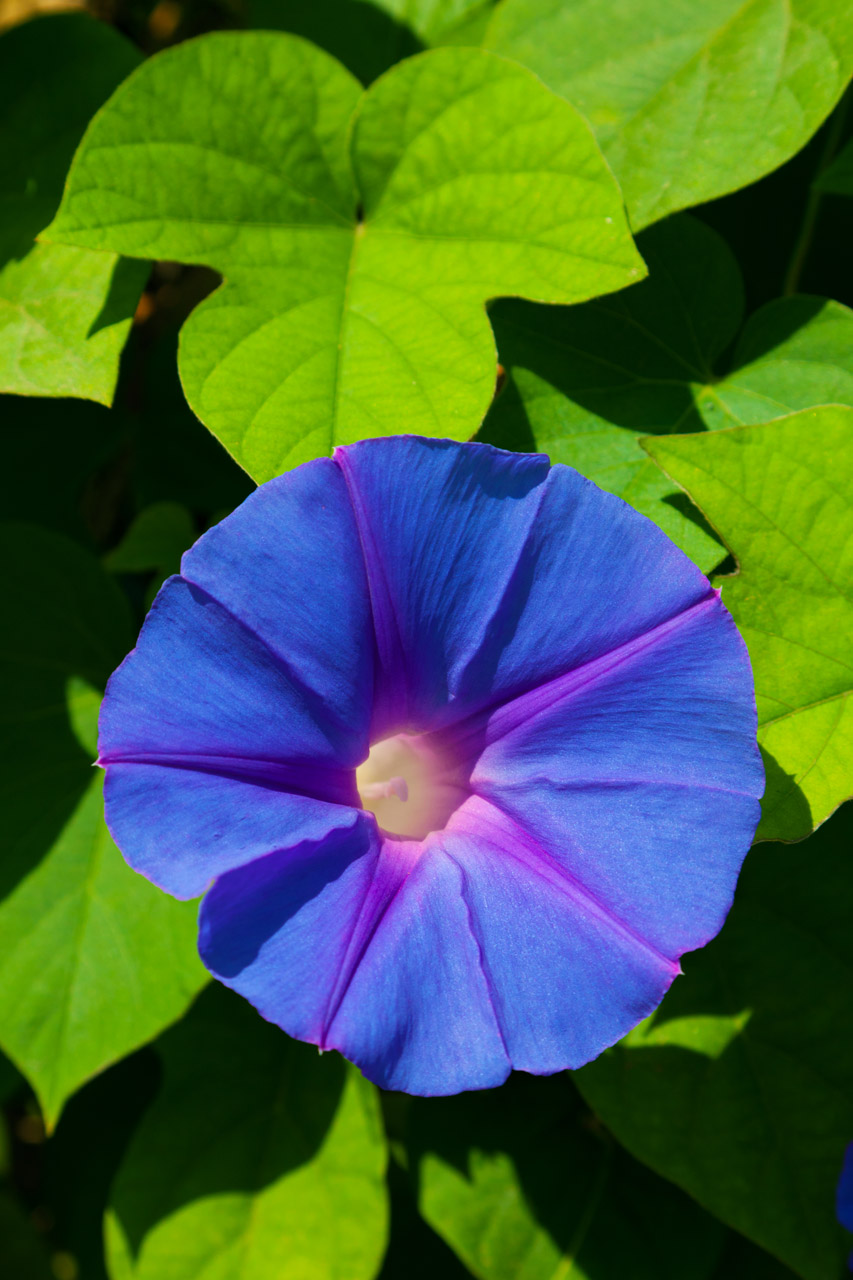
Morning glory flower

Blue morning glory flower with green leaves.